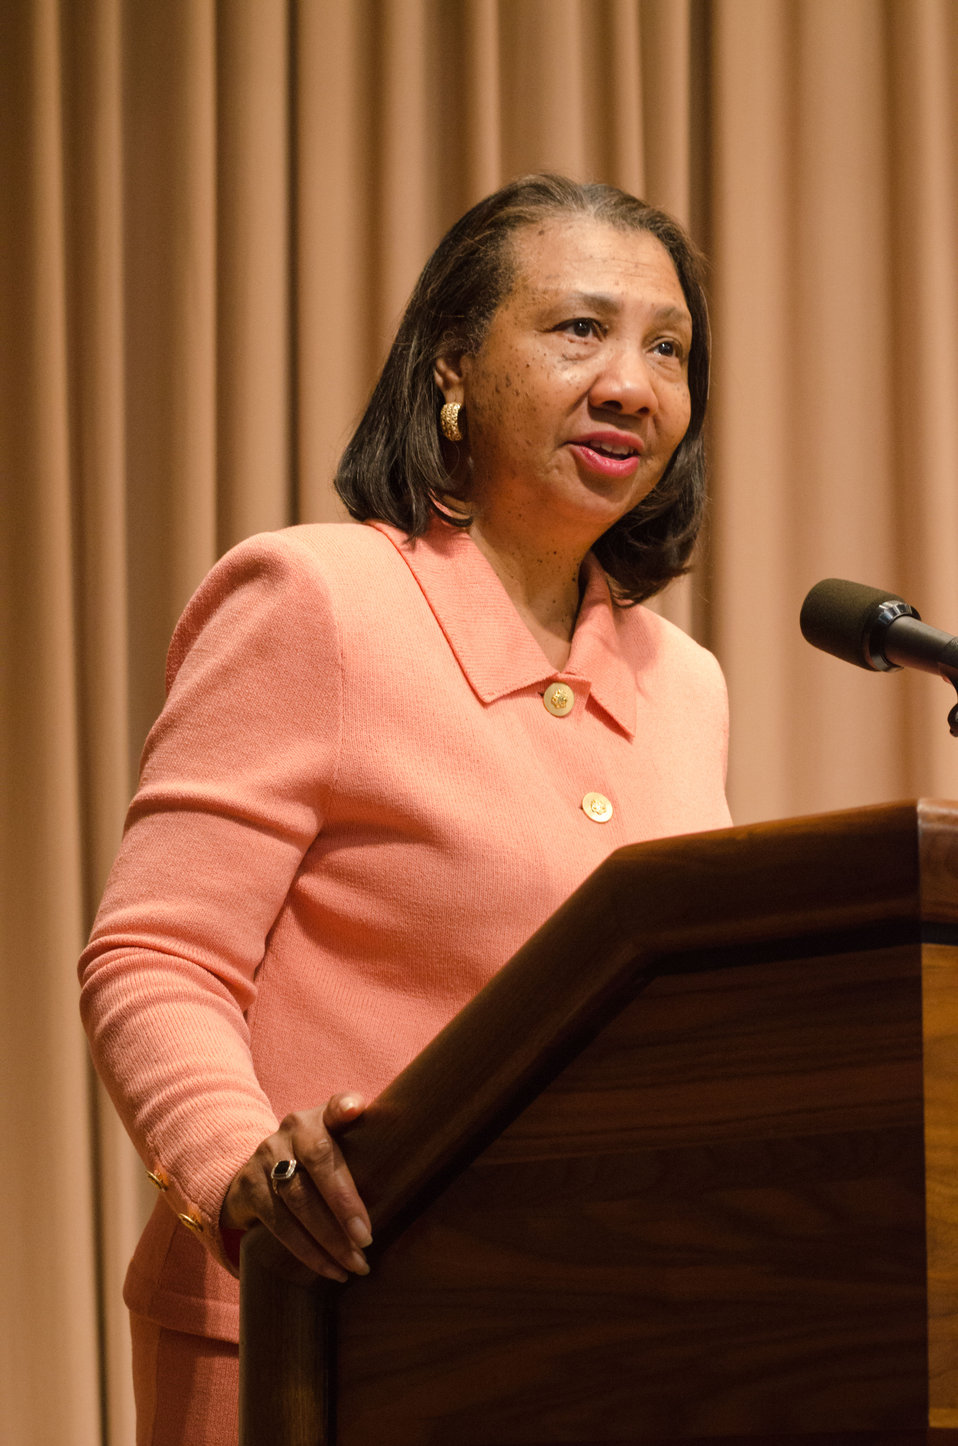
Agriculture Associate Assistant Secretary for Administration Dr. Alma Hobbs received the 2012 Asian Pacific American Heritage Leadership Award at the 2012 Asian Pacific American Heritage Observance “Striving for Excellence in Leadership, Diversity and Inclusion” at the U.S. Department of Agriculture in Washington, D.C. on Thursday, May 24, 2012.